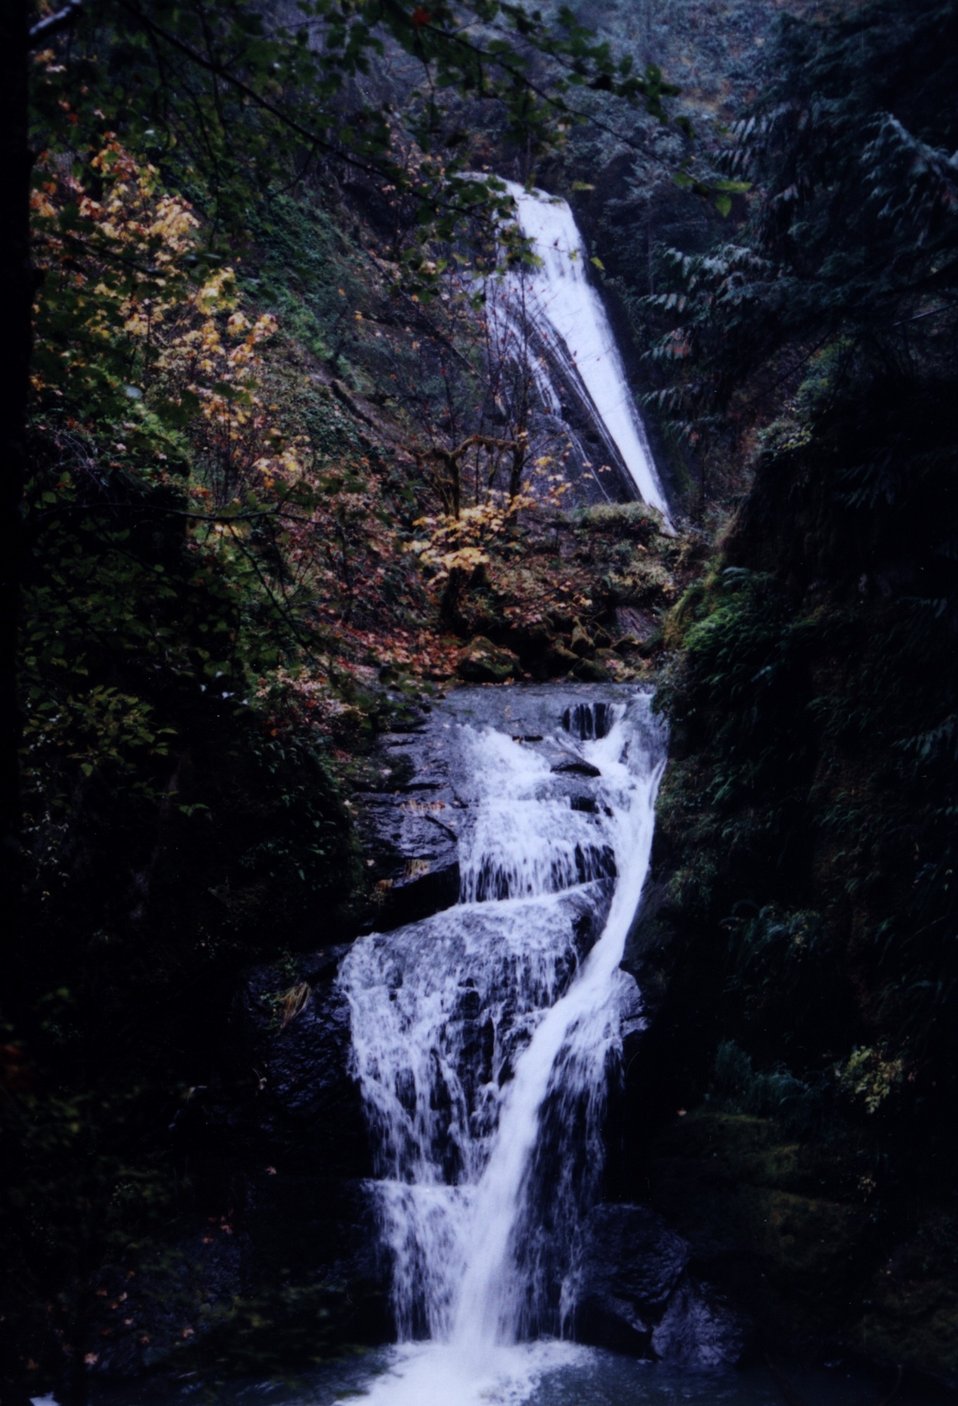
Upper and Lower Wolf Creek Falls.